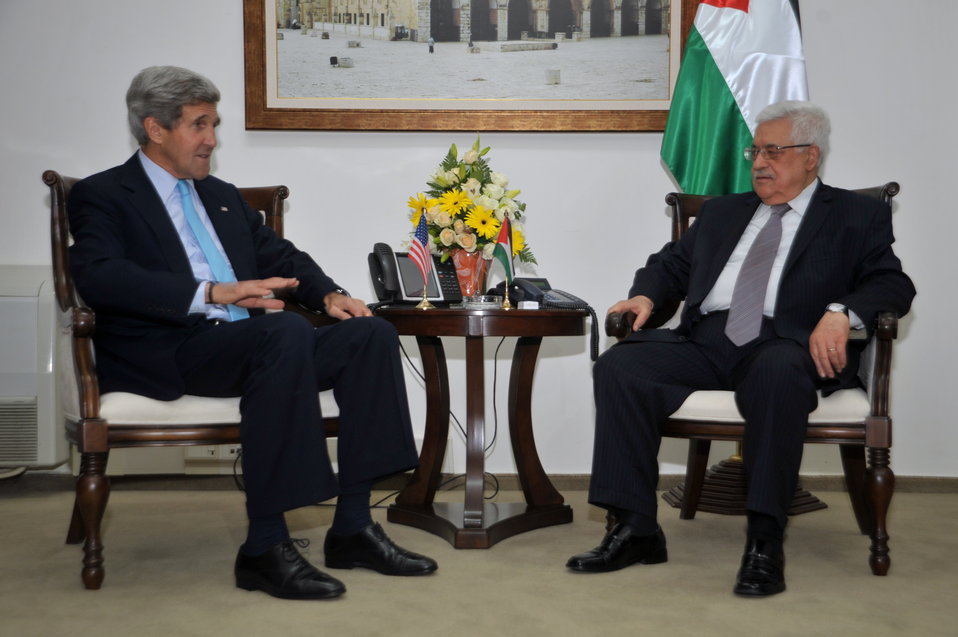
Secretary Kerry Meets With Palestinian Authority President Abbas

U.S. Secretary of State John Kerry meets with President Mahmoud Abbas at Palestinian Authority headquarters in Ramallah, West Bank, on June 30, 2013.